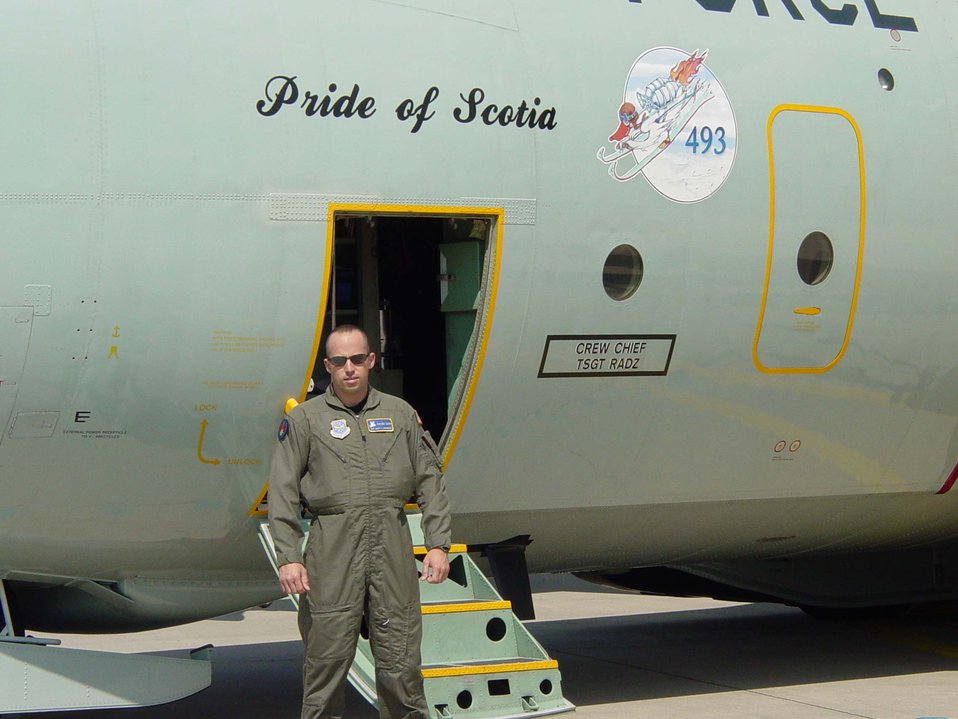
Airmen pay tribute to fallen guardsman

Master Sgt. Joseph Longobardo stands in front of an LC-130 Hercules assigned to the New York Air National Guard's 109th Airlift Wing. Sergeant Longobardo, a guardsman with the 109th Security Forces Squadron, was a New York State Police officer who was killed in the line of duty Sept. 3 while participating in the manhunt for fugitive Ralph